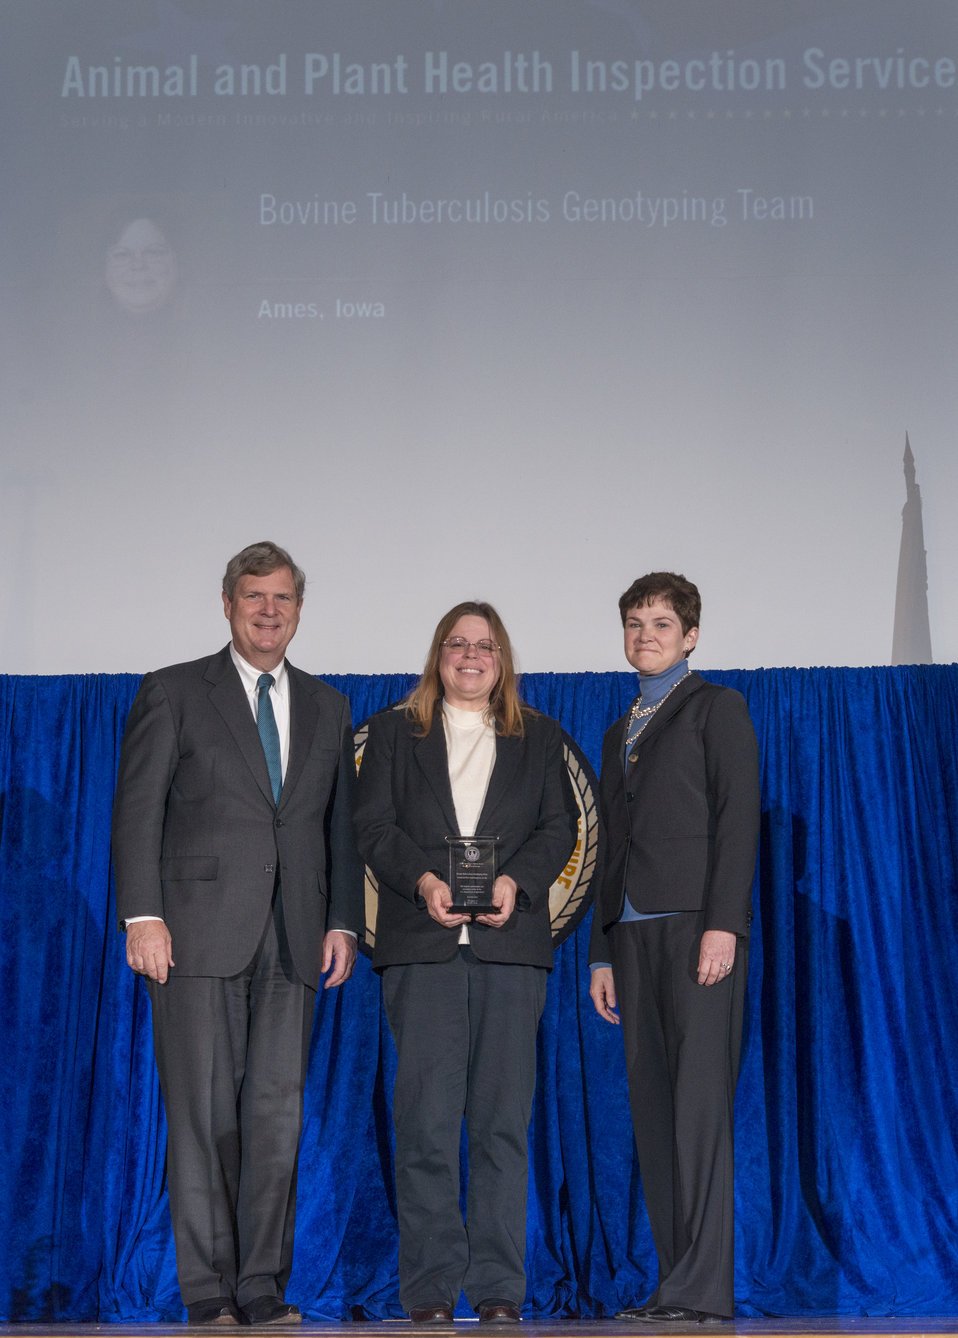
Agriculture Secretary Tom Vilsack and Agriculture Deputy Secretary Krysta Harden present the Secretary’s Honor Award to Bovine Tuberculosis Genotyping Team, Animal and Plant Health Inspection Service (APHIS) in Ames, IA Group leader Suelee Robbe-Austerman, DVM, M.S., Ph.D., for implementing whole genome sequencing to increase the efficiency and cost-effectiveness of the bovine tuberculosis eradication program and position the U.S. Department of Agriculture (USDA) to better serve its stakeholders at the 2013 Secretary's Honor Awards in the Jefferson Auditorium at USDA in Washington, D.C. on Wednesday, Dec. 11, 2013.